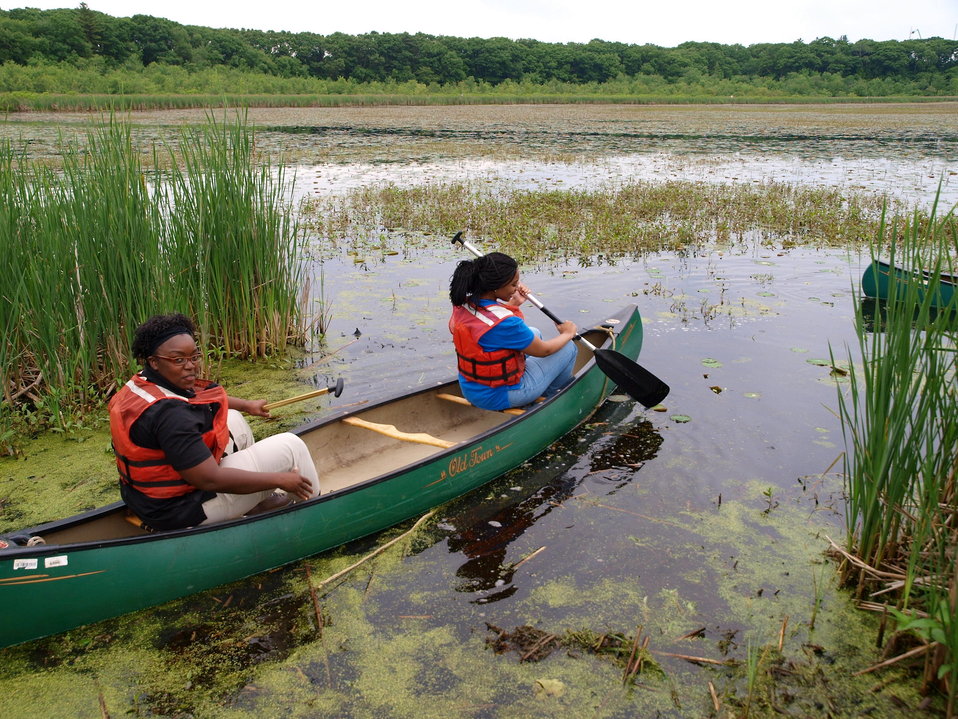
Canoeing for Waterchestnuts

Chivia and Shanita canoeing!